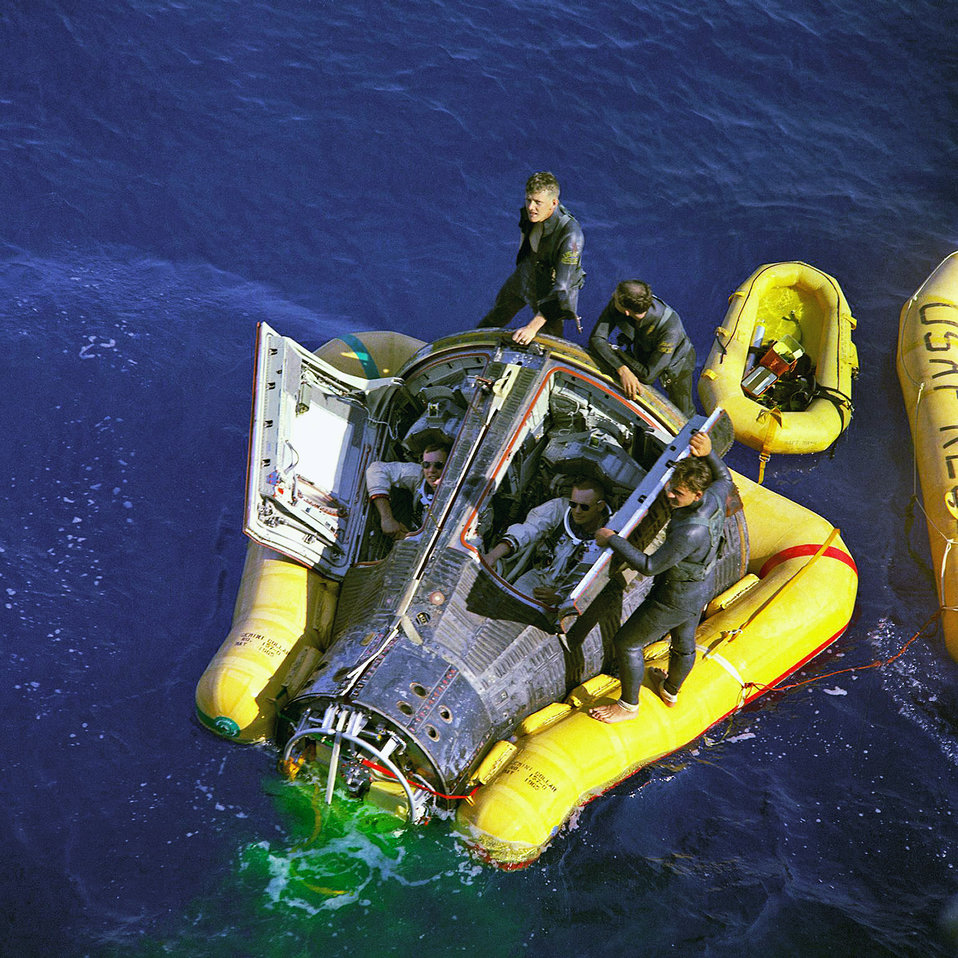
Pararescuemen conduct water test of new NASA capsule

Air Force pararescuemen flank Astronauts Neil A. Armstrong and David R. Scott, sitting in the Gemini 8 space craft, while awaiting the arrival of the recovery ship, the USS Leonard F. Mason after splashdown in the Pacific Ocean March 16, 1966, in the Philippine Sea. Reservists from the 920th Rescue Wing at Patrick Air Force Base, Fla., provide first-response contingency medical and rescue support for all NASA shuttle launches. With the advent of the NASA's new capsule-based, manned-spaceflight program, Constellation, Air Force pararescuemen will once again greet astronauts on the high seas following splashdown.